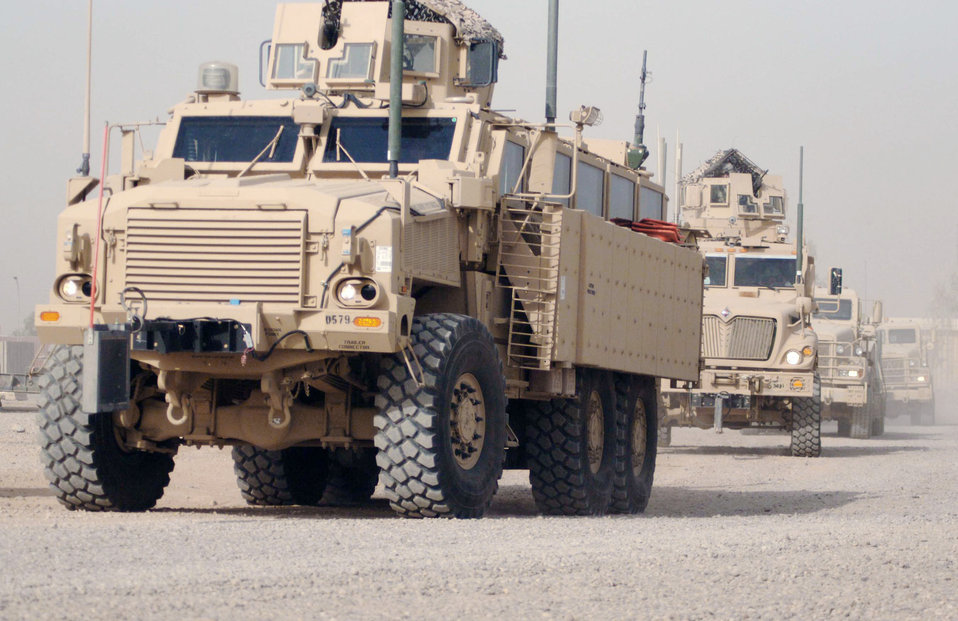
U.S. servicemembers withdraw from Iraqi cities, move to main installations

Airmen from the 732nd Expeditionary Civil Engineer Squadron Construction Team 6 head out from Joint Base Balad, Iraq, on a tactical resupply convoy to bring additional Airmen and construction materials to a construction site June 27 at Forward-Operating Base Bernstein, Iraq. The team is constructing five Southwest Asia huts there to support the beddown of Soldiers who are withdrawing from the inner cities of Iraq in accordance with the U.S.-Iraqi Security Agreement signed in November 2008, which states servicemembers are to withdraw from Iraqi cities by June 30. Additionally, the 732nd ECES CT 6 Airmen will correct electrical and plumbing safety issues.